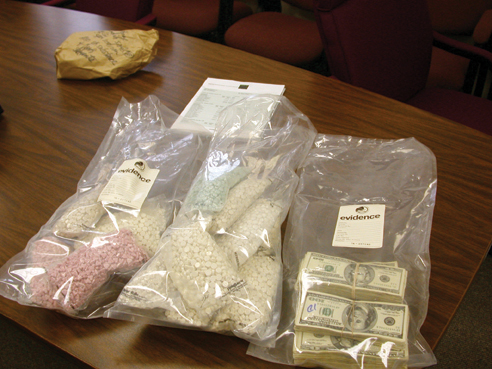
Drug bust

MOODY AIR FORCE BASE, Ga. -- Search teams uncovered more than 16,000 Ecstasy pills and $50,000 in cash belonging to Senior Airman Fredenburg stationed here. Agents also seized three motor vehicles and a motorcycle, and they uncovered evidence that indicated he had tens of thousands of dollars in numerous investment accounts.